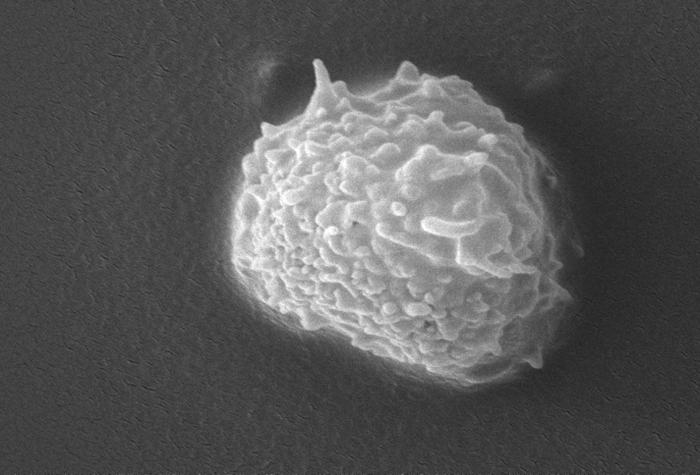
This scanning electron micrograph (SEM) revealed some of the ultrastructural features seen on the surface of an Acanthamoeba polyphaga protozoan. Note the numerous projecting pseudopodia, from the Latin pseudo = false, and podia = feet, which extend from the organism's surface. These enable the amoeba to move about, and grasp objects in its environment.